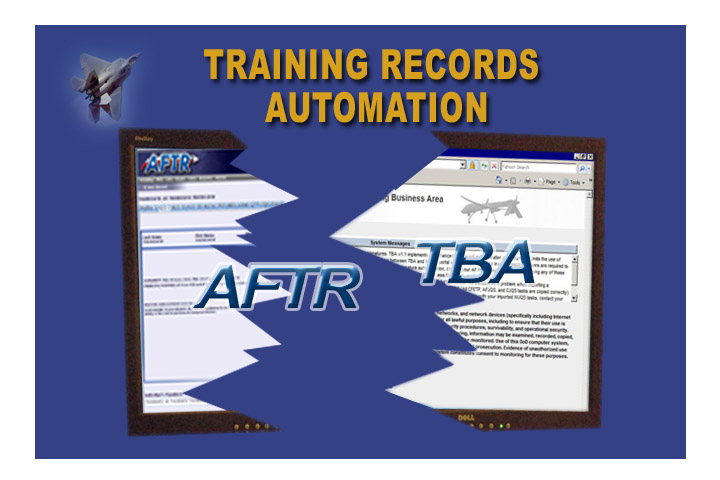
Air Force training records go digital

Air Force officials are fielding two systems for keeping training records electronically.